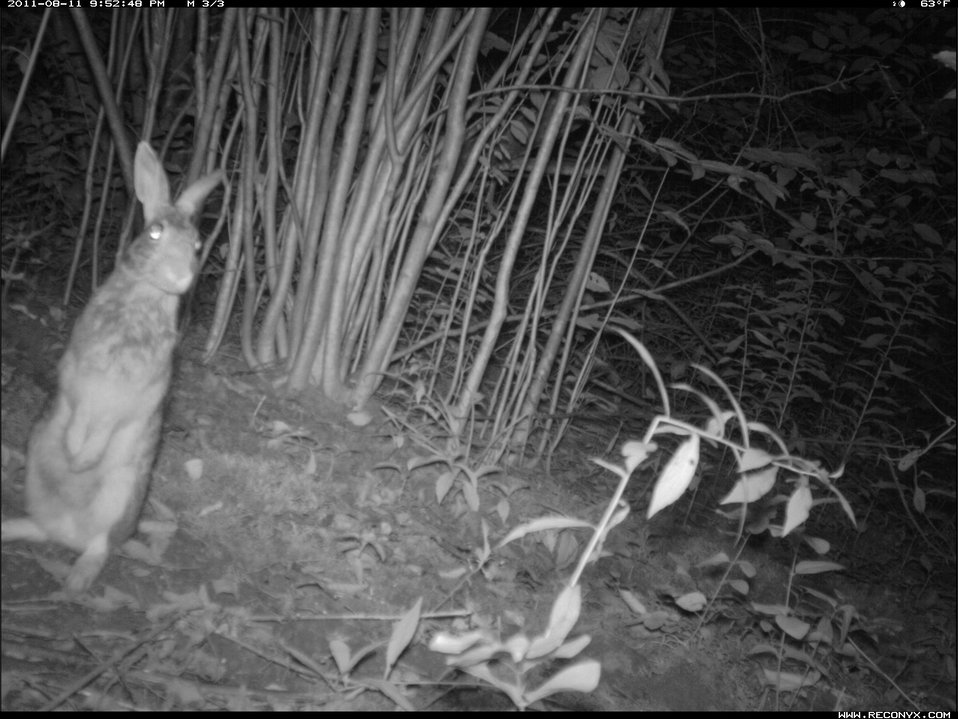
Cottontail